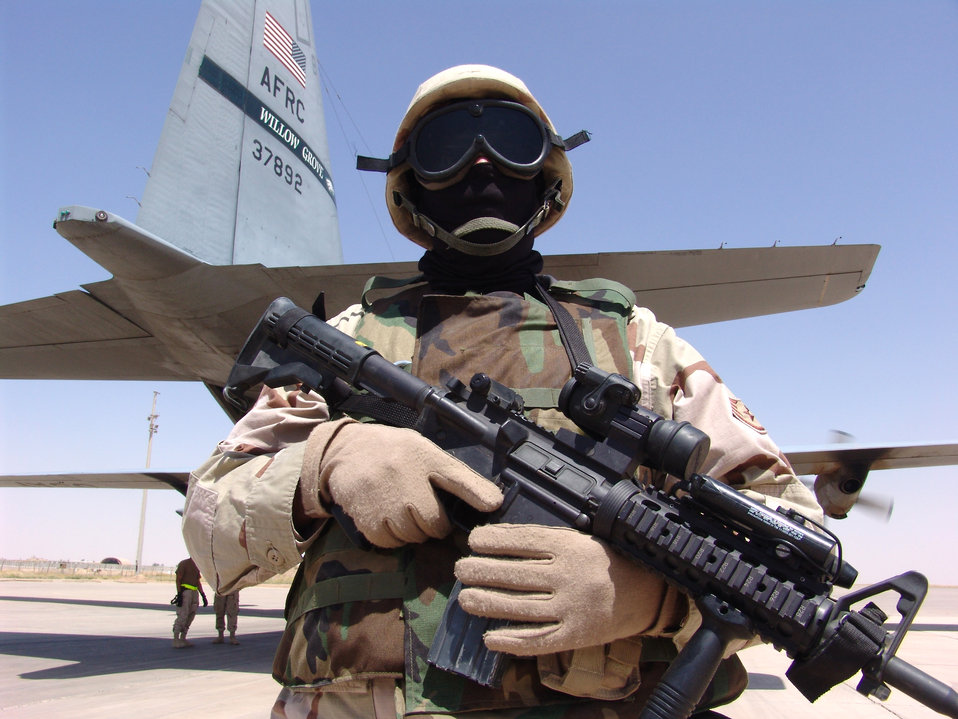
Ravens on guard

SOUTHWEST ASIA -- Staff Sgt. Leslie Poling guards a C-130 Hercules and crew after arriving at Kirkuk Air Base, Iraq. Security Forces' Ravens are flyaway security forces teams that protect aircraft and aircrews while airborne and on the ground. Sergeant Poling is assigned to the 386th Expeditionary Security Forces Squadron and is deployed from Royal Air Force Lakenheath, England.